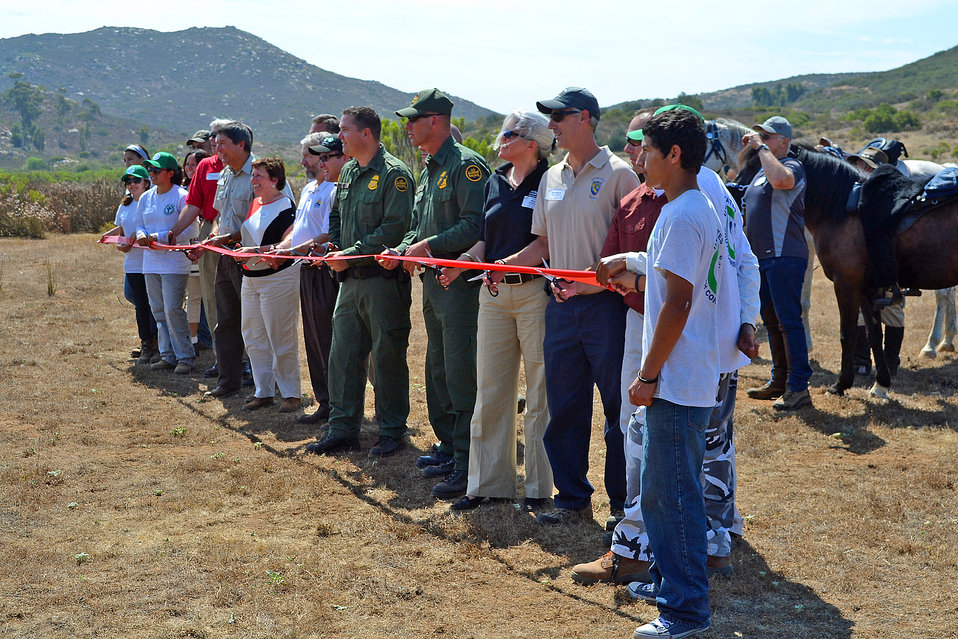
Hidden Valley Ribbon Cutting

(USFWS)